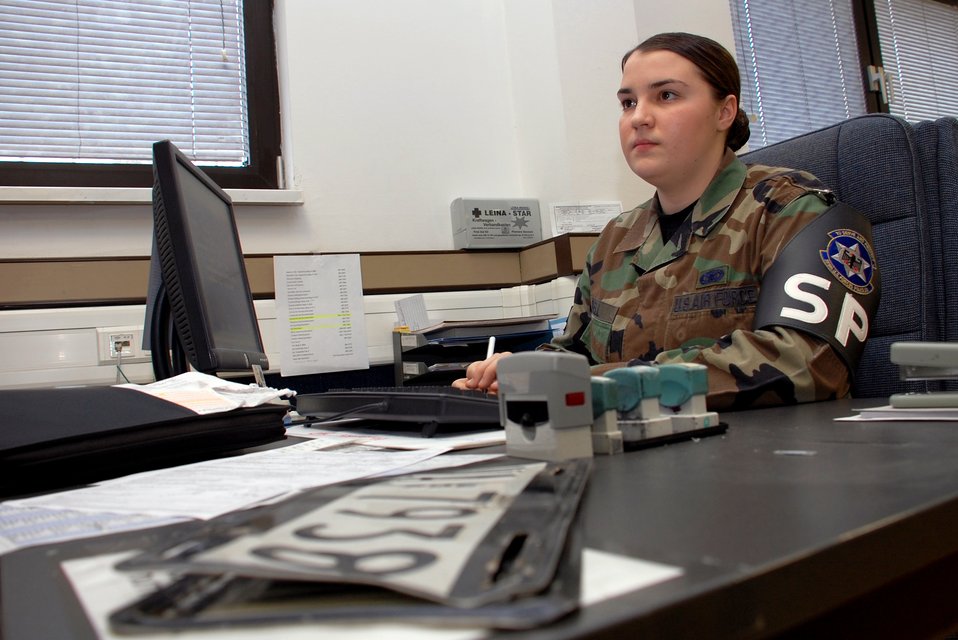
Vehicle registration streamlines customer service

Airman 1st Class Nicole Bell works in the vehicle registration office Feb. 1 on Kapaun Air Station, Germany. Members of the vehicle registration office realigned its workflow as part of an Air Force Smart Operations for the 21st century initiative to reduce customer waiting times.